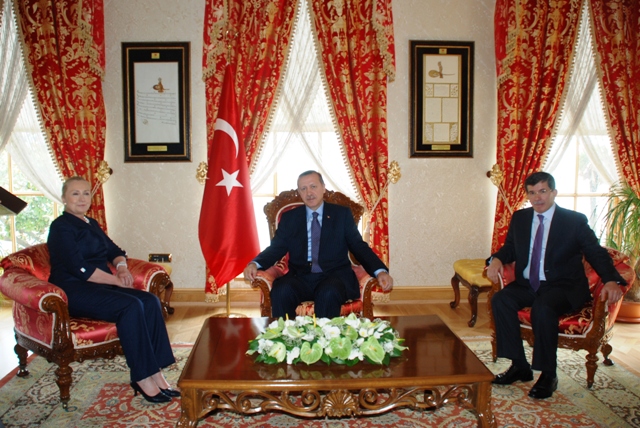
Secretary Clinton Meets With Turkish Prime Minister Erdoğan and Turkish Foreign Minister Davutoğlu

U.S. Secretary of State Hillary Rodham Clinton, left, meets with Turkish Prime Minister Recep Tayyip Erdoğan, center, and Turkish Foreign Minister Ahmet Davutoğlu, right, at the Dolmabache Palace in Istanbul, Turkey, on August 11, 2012.